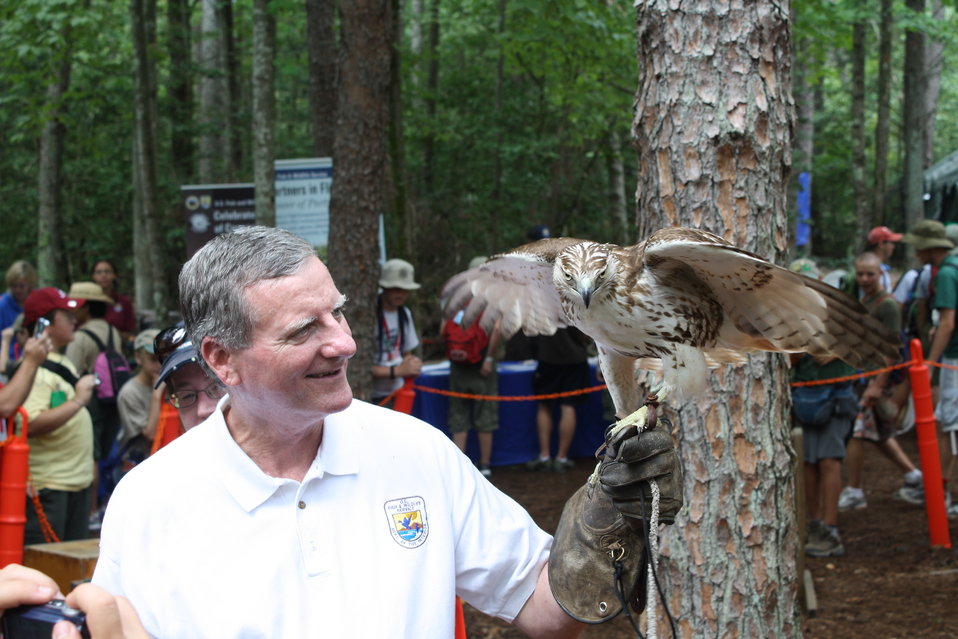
Boy Scout Jamboree 2010